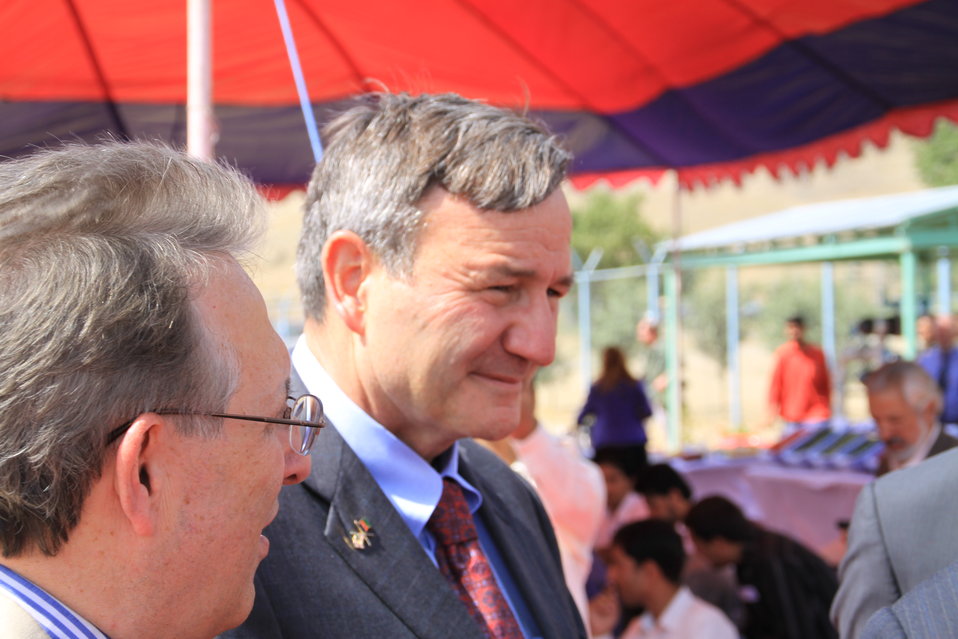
Badam Bagh Farm